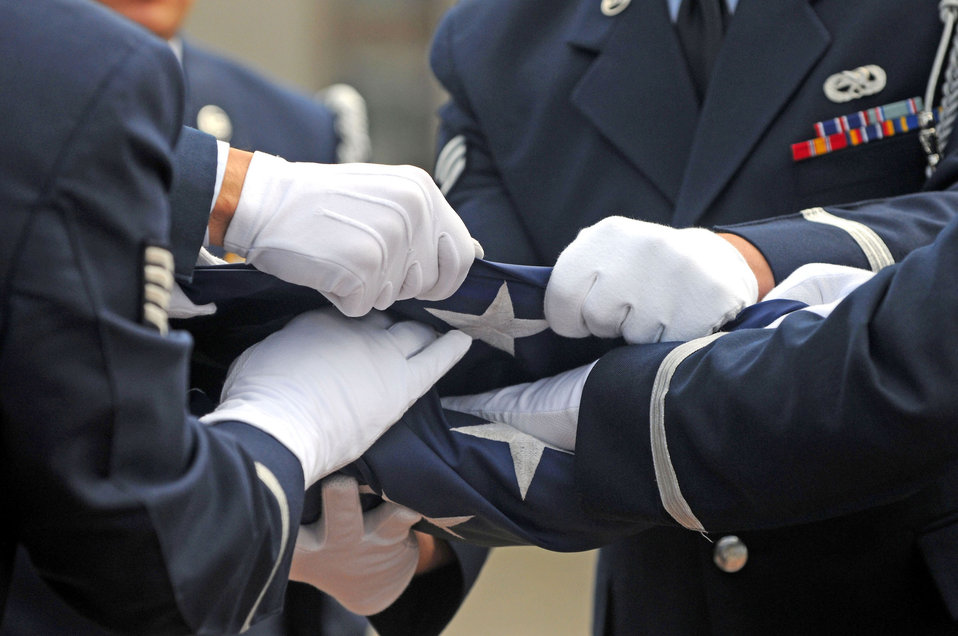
In respect and honor

Members of the 86th Airlift Wing base honor guard conduct a flag-folding ceremony during the Ramstein Honor Guard Appreciation Day, Sept. 11, 2009, at Ramstein Air Base, Germany.